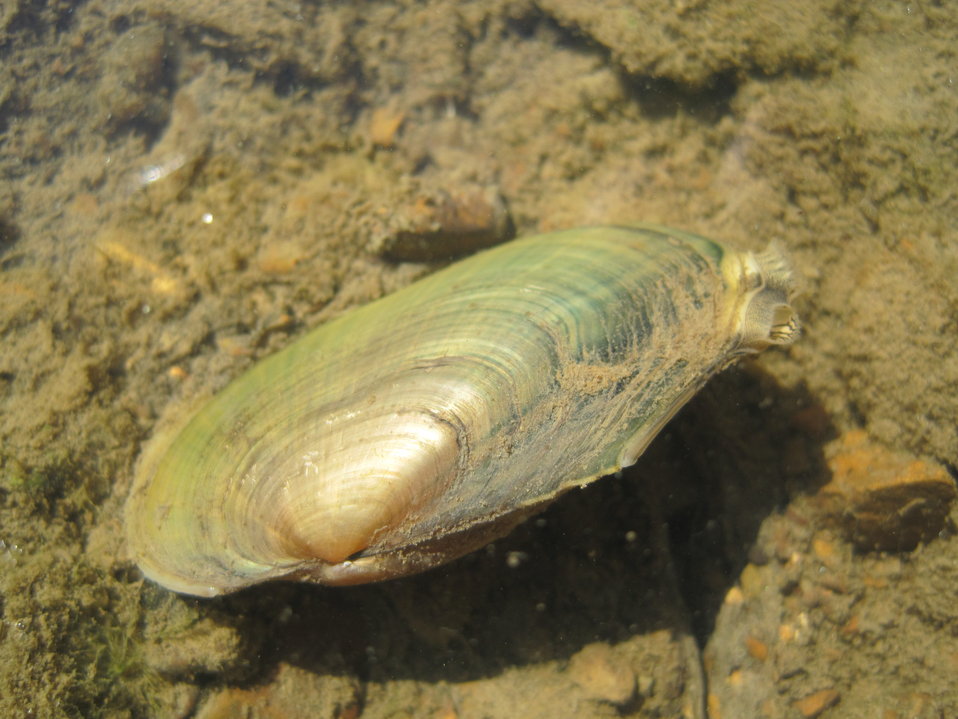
Fragile Papershell Mussel

This Fragile Papershell Mussel (Leptodea fragilis) is doing what mussels do best: filtering sediment out of the river to feed themselves, which simultaneously cleans the water. This mussel was in the Marais des Cygnes River in October, 2011.